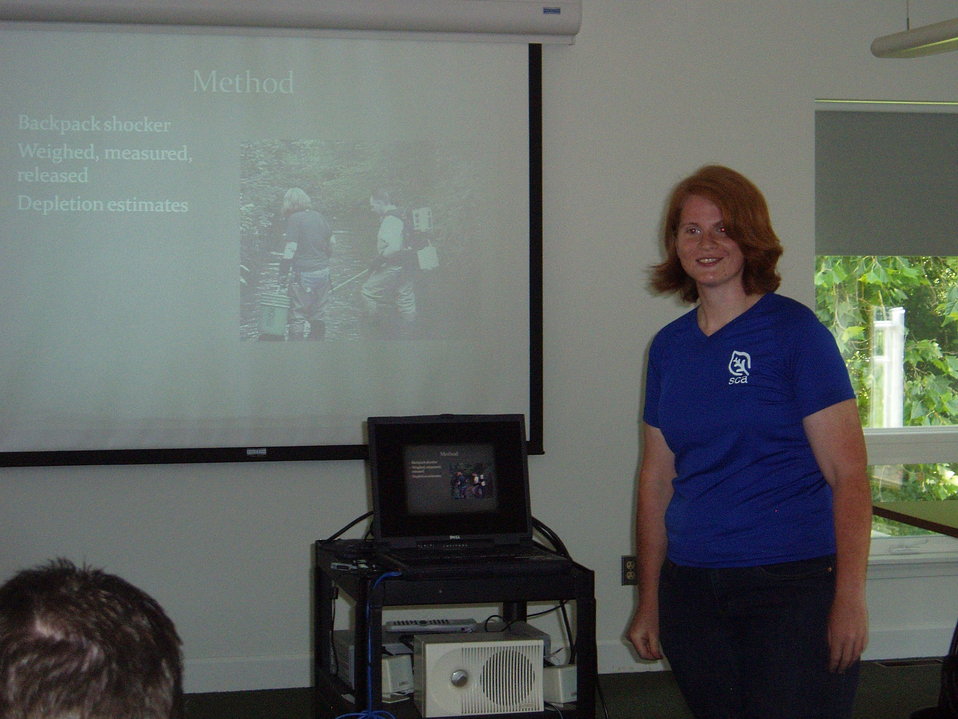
Giving a presentation at the Northeast Fishery Center.